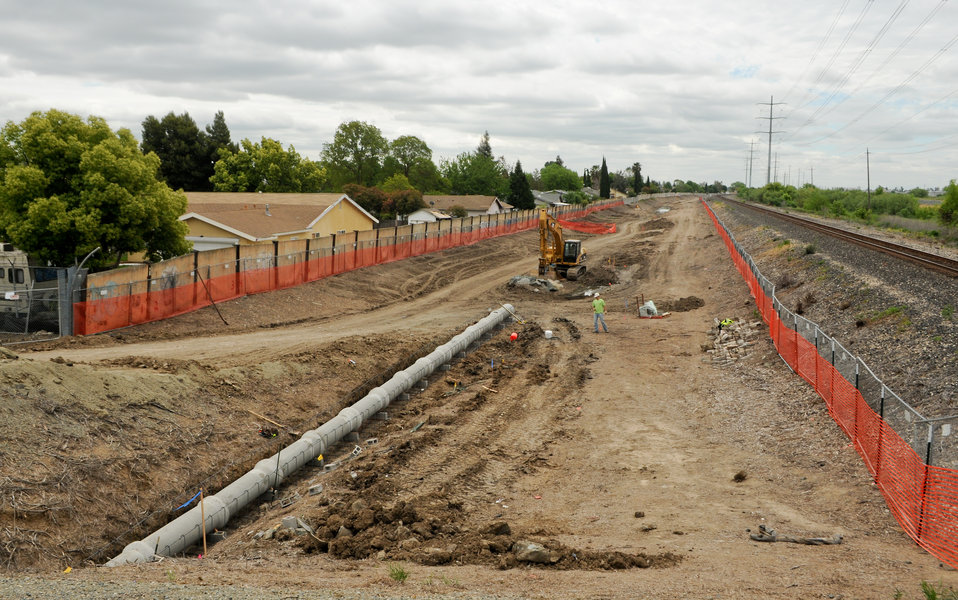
Corps begins flood wall work at Morrison Creek in south Sacramento

Contractors for the U.S. Army Corps of Engineers Sacramento District extend a drainage line May 3, 2012, in preparation for building a new concrete flood wall along Morrison Creek in south Sacramento, Calif.